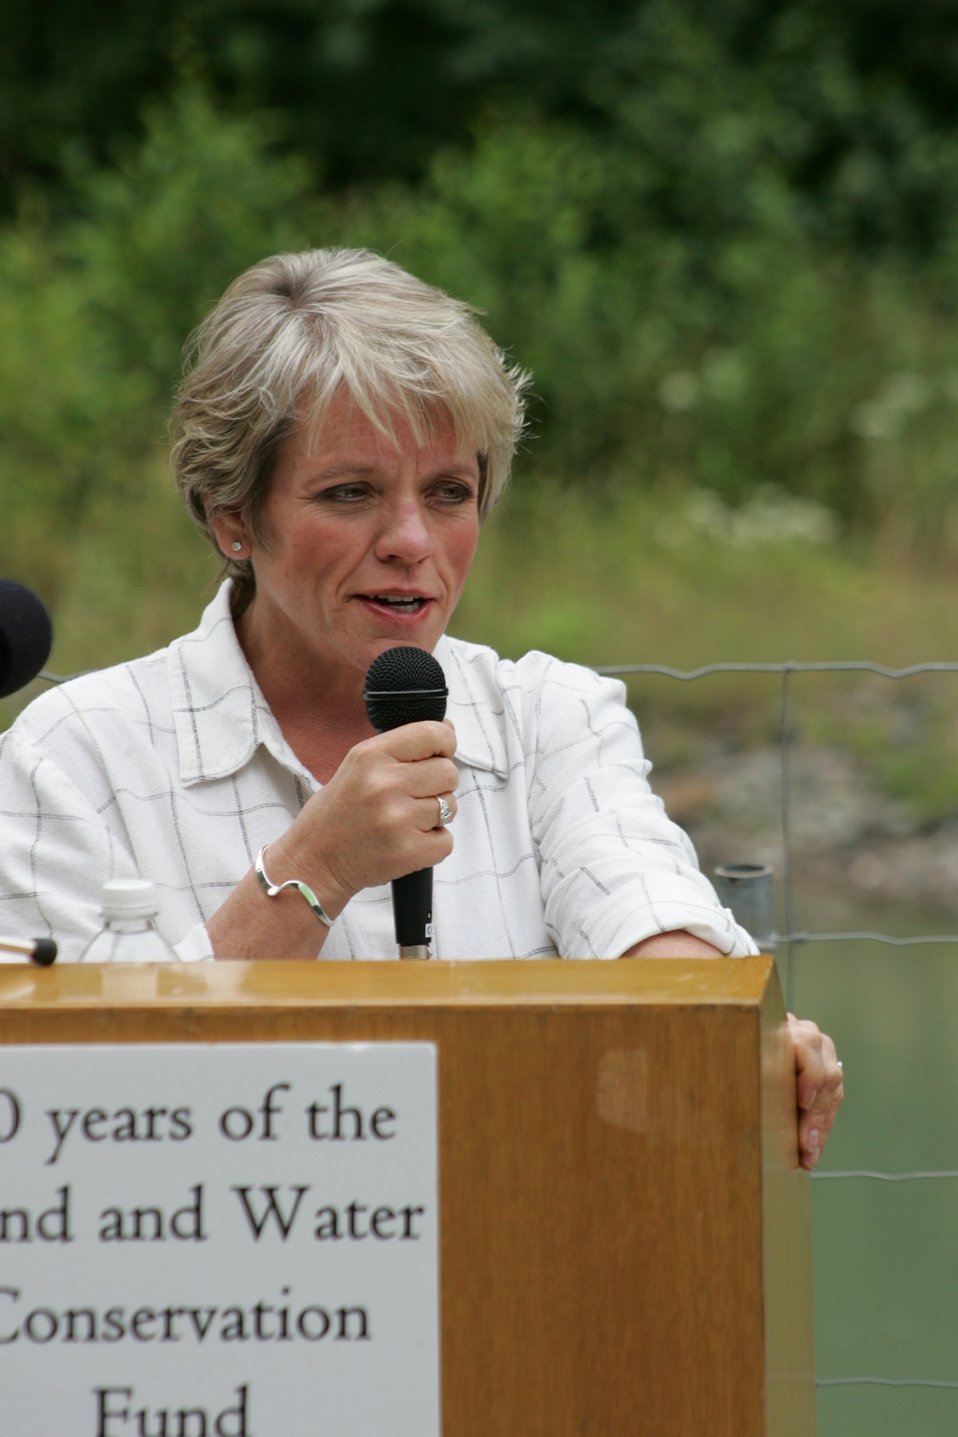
Kathleen Clarke, BLM Director, presents the Four C's Award at the Little Sandy Dam to PGE and the Western River Conservancy.